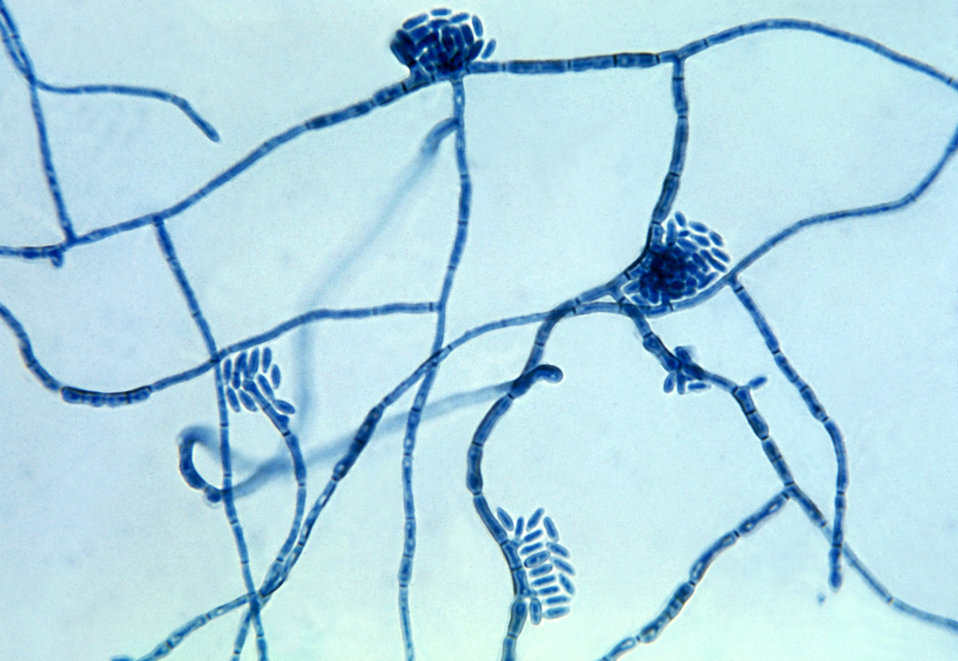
This micrograph of the fungus Hortaea werneckii, the causative agent of tinea nigra, was taken from a slide culture.